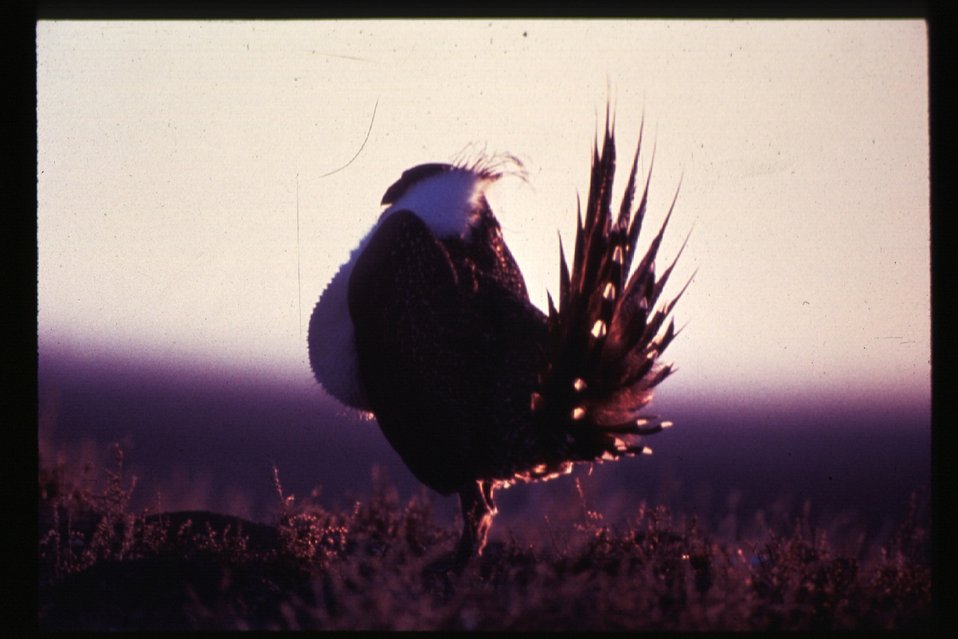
Sage Grouse Wildlife LSRD Lower Snake River District